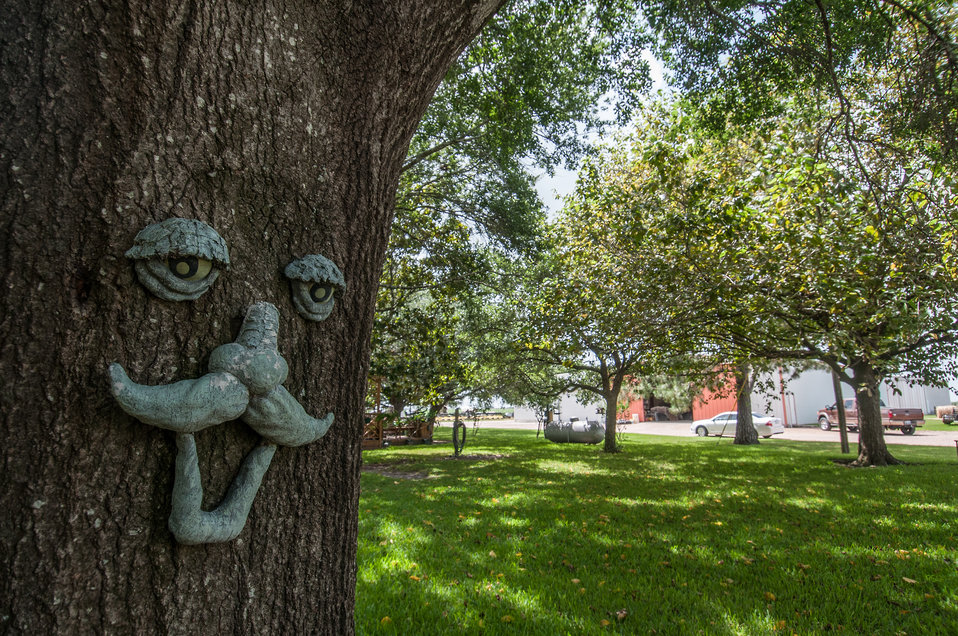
A view of Popp (pronounced Pope) Farms 05 in El Campo, TX on Jun. 20, 2013. The Popp family spans five generations. The 24,000 acres of farmland currently grow cotton and milo (grain sorghum) and are part of the United Agricultural Cooperative, Incorporated.